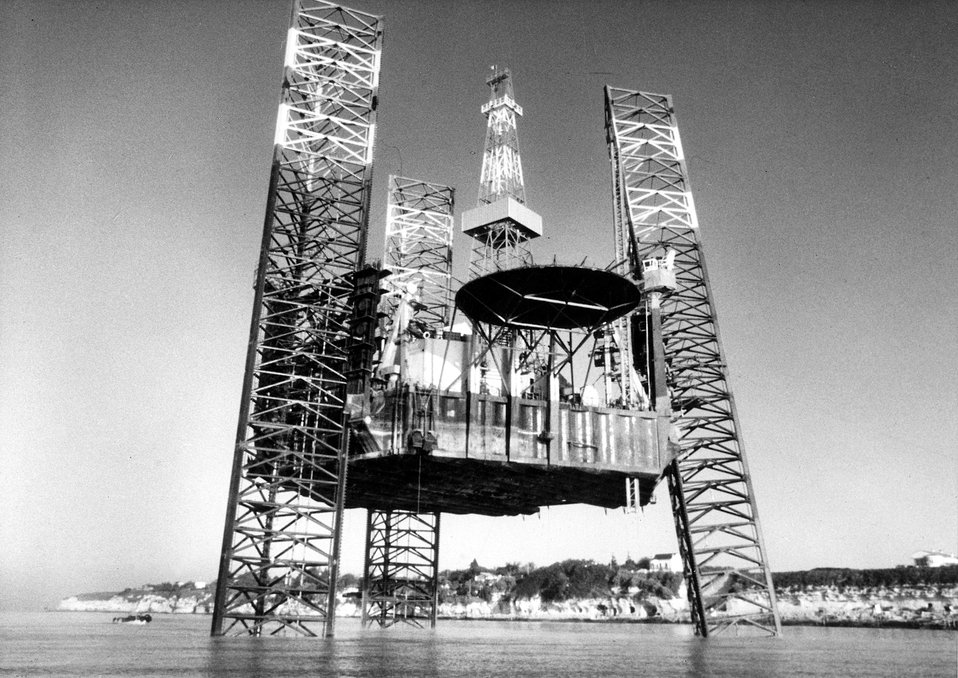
Offshore drilling. c. undated